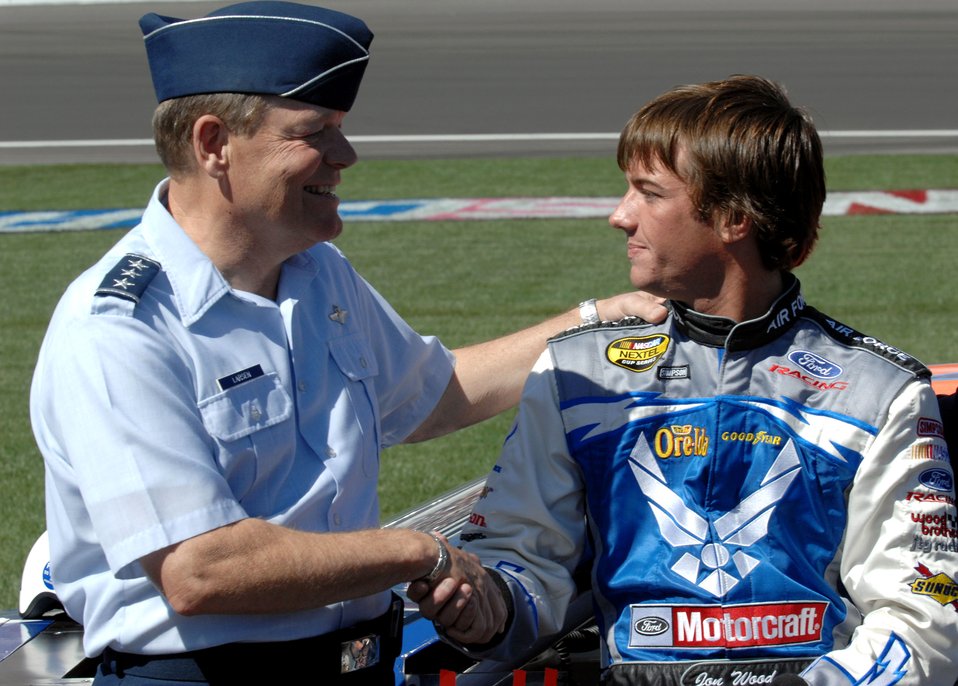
NASCAR Nextel Cup UAW Daimler-Chrysler

Lt. Gen. Dennis R. Larsen wishes Jon Wood, driver of the Air Force #21 car